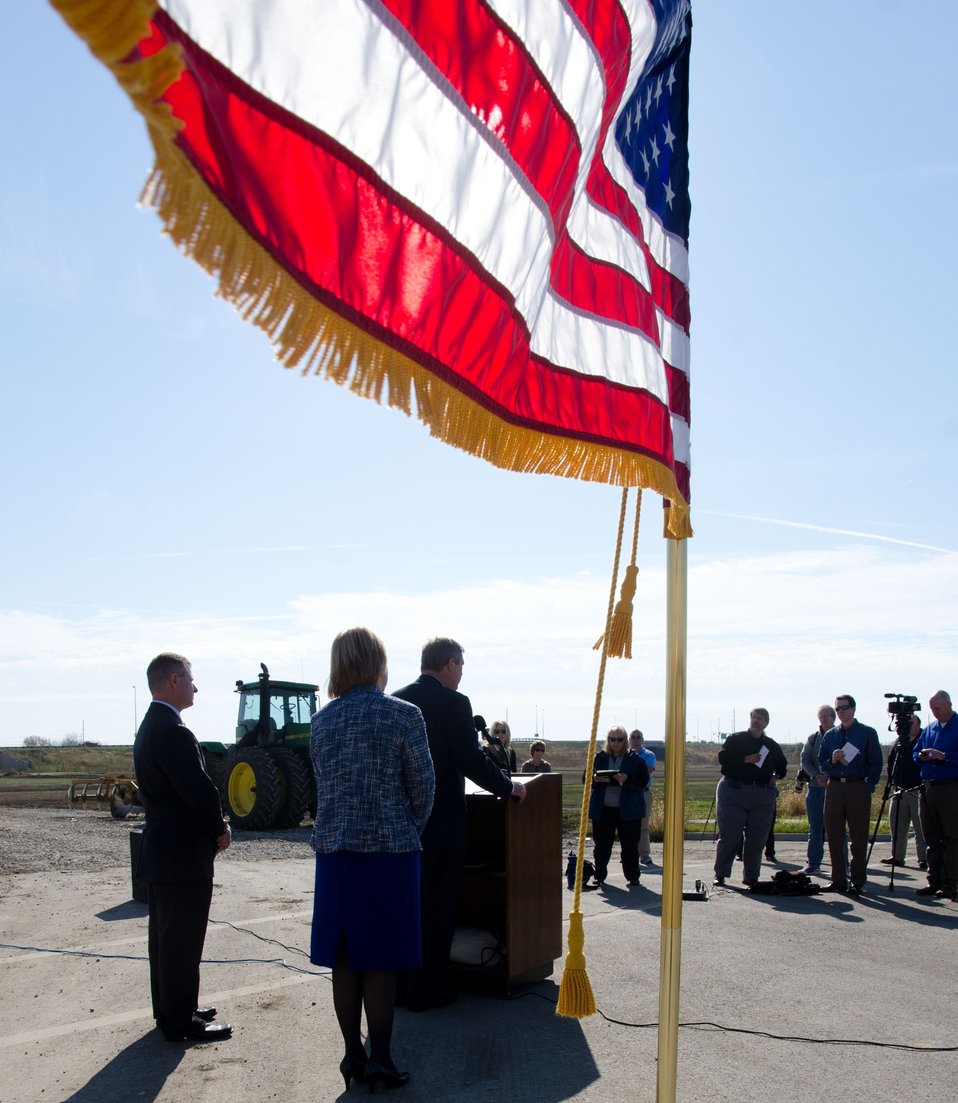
U.S. Department of Agriculture Secretary Tom Vilsack (at podium), Illinois Department of Transportation Acting Secretary of Transportation Ann Schneider (second from l.) and Sangamon County Recorder of Deeds (l.) visited a recently completed transportation project that extended the existing MacArthur Boulevard and new interchange with Interstate 72, which brought new businesses and 500 new jobs to Springfield, IL on Nov. 2, 2011. Agriculture Secretary Tom Vilsack discussed the Administration's strategy to strengthen the U.S. economy and to highlight what passage of the American Jobs Act will mean for Illinoisans. 'The American Jobs Act provides common-sense steps we can take right now to put more people back to work and put more money in the pockets of working Americans, without adding a dime to the deficit,' said Secretary Vilsack. 'In Illinois, this Act will provide a tax cut for over 260,000 businesses, support the jobs of 14,500 teachers and first responders and immediately provide a job for over 20,700 construction workers through infrastructure improvements. A typical household in Illinois will receive a tax cut of around $1,640.'